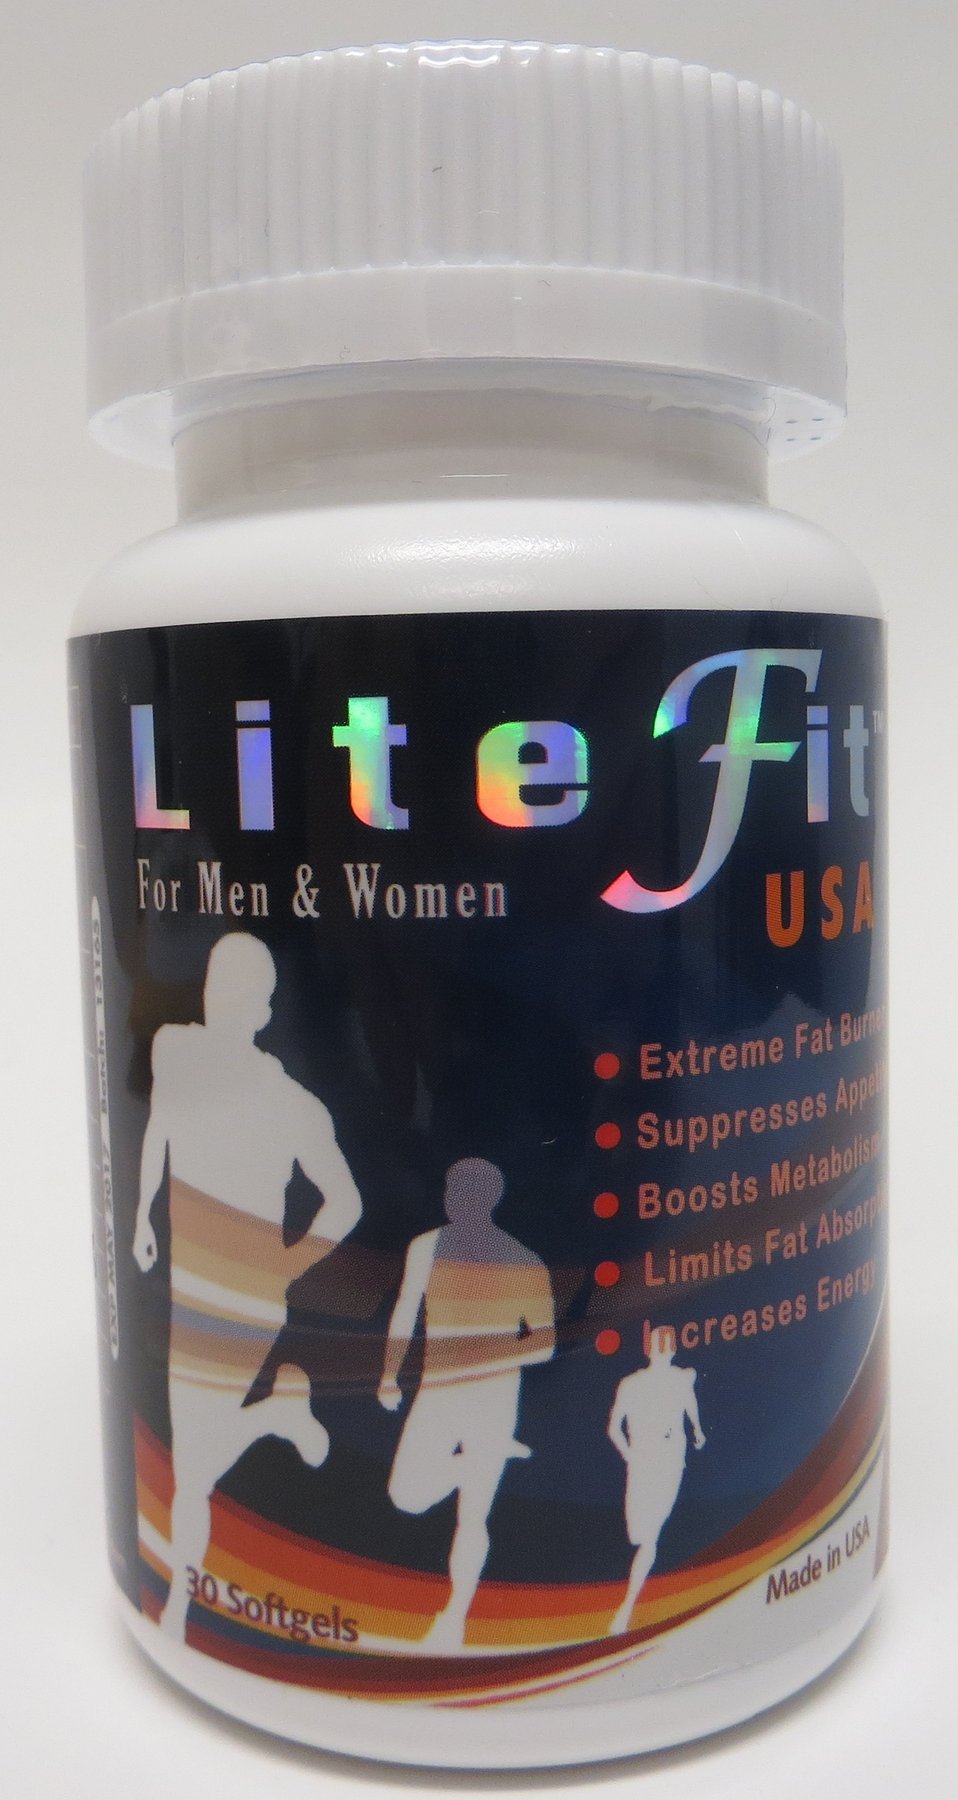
Lite Fit USA

April 10, 2014 - The FDA is advising consumers not to purchase or use Lite Fit USA, a product promoted and sold for weight loss. The product was found to contain undeclared sibutramine. For more information, go to www.fda.gov/Drugs/ResourcesForYou/Consumers/BuyingUsingMe...

And read this Consumer Update: Beware of Fraudulent ‘Dietary Supplements’